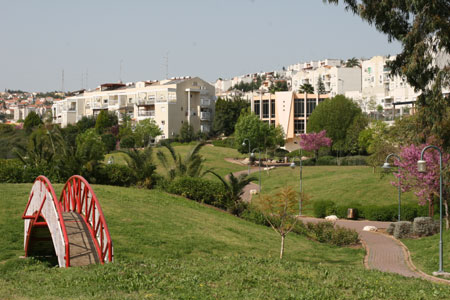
One of the parks in Yokneam Illit